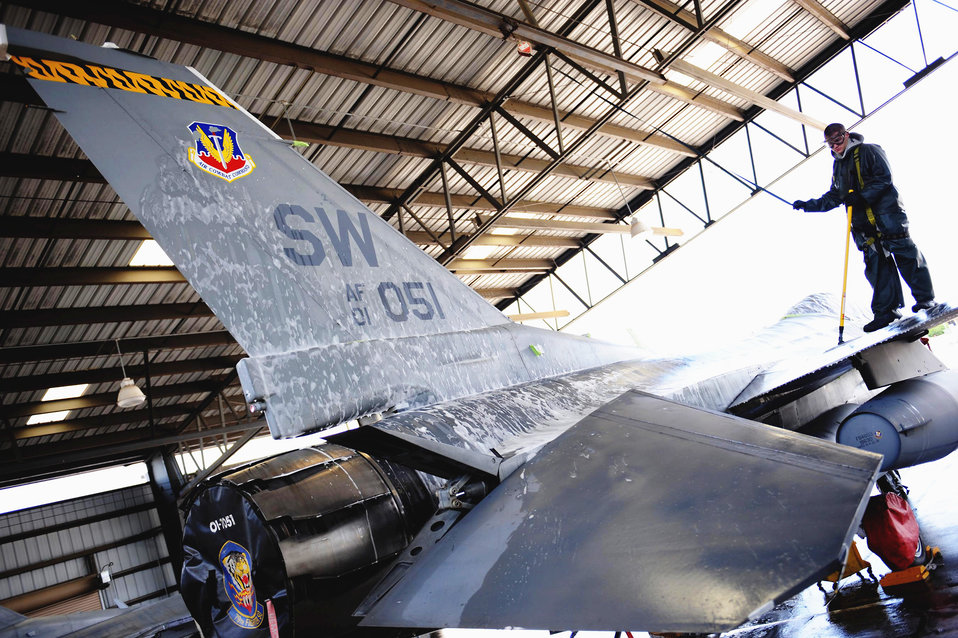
Airman washes an F-16 Fighting Falcon

Airman 1st Class Marcus Floyd washes an F-16 Fighting Falcon from the 79th Fighter Squadron at Shaw Air Force Base, S.C. Airmen from the 20th Maintenance Group were participating in an Air Force Smart Operations for the 21st Century rapid improvement event to enhance and improve wash rack operations for F-16 aircraft. Airman Floyd is an armament specialist assigned to 20th Equipment Maintenance Squadron.